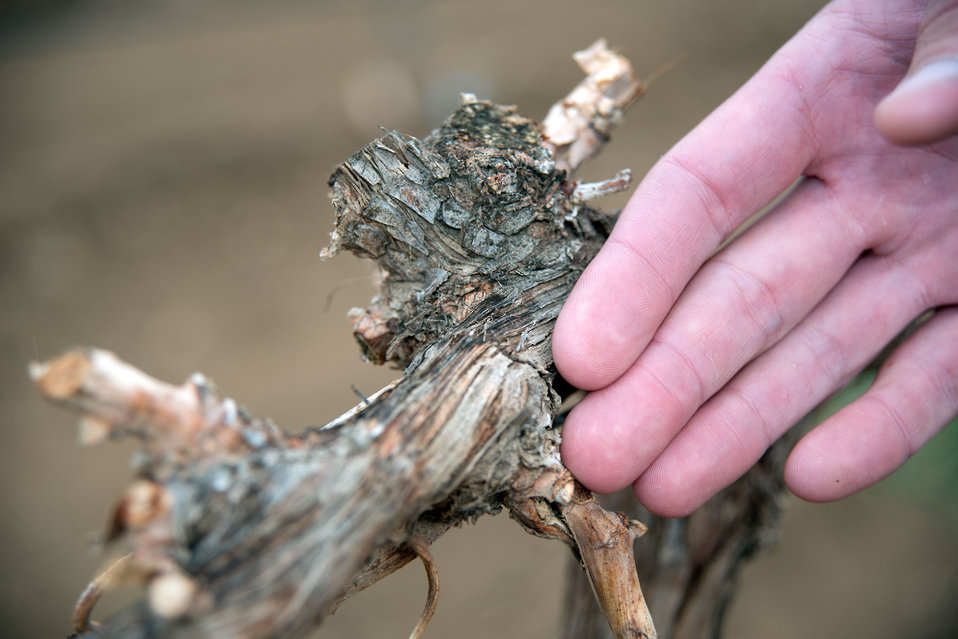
A close-up of damaged grape vines in Michael Vandborg’s drought stricken vineyard in the Lamont farming community in southeastern Joaquin Valley in Kern County, CA on Feb. 26, 2014.